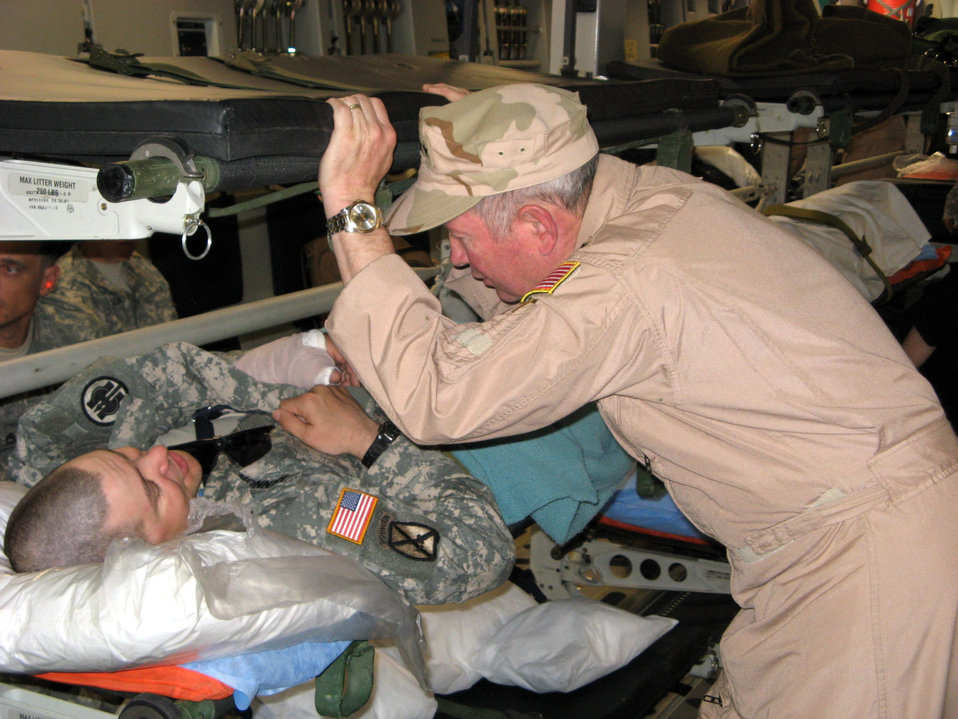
Vice chief visits wounded warriors in Iraq

Gen. Duncan J. McNabb speaks to an injured Soldier May 29 during a flight from Iraq to Ramstein Air Base, Germany. General McNabb traveled to the Air Force Theater Hospital at Balad AB, Iraq, to visit wounded warriors and accompany them on a flight back to Ramstein AB. General McNabb is the Air Force vice chief of staff.